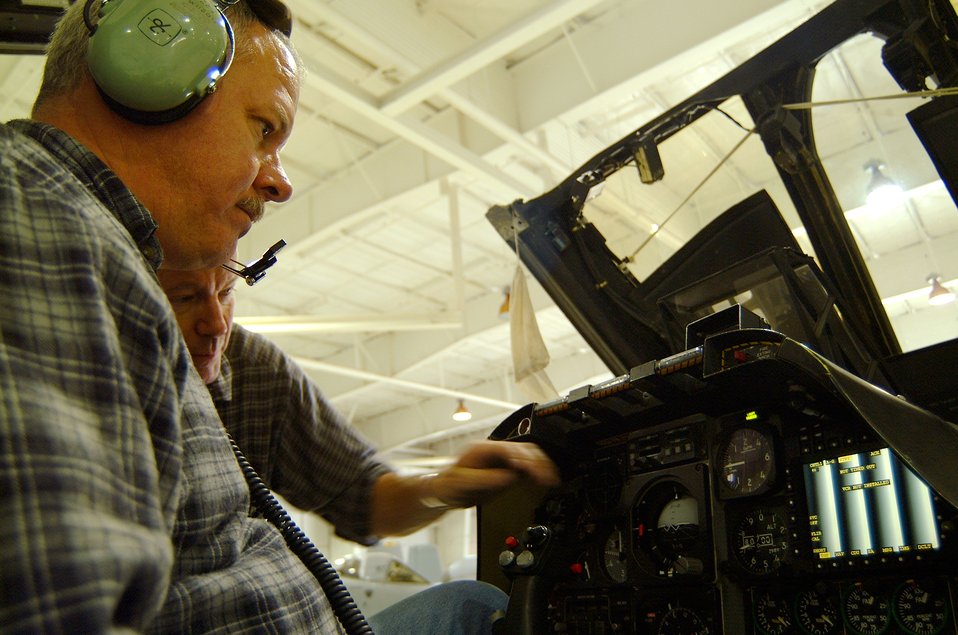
Whiteman A-10s upgrading with

Air Reserve Technician Tech. Sgts. Jim Wilson (left) and Paul Hanson check a test pattern on a newly installed